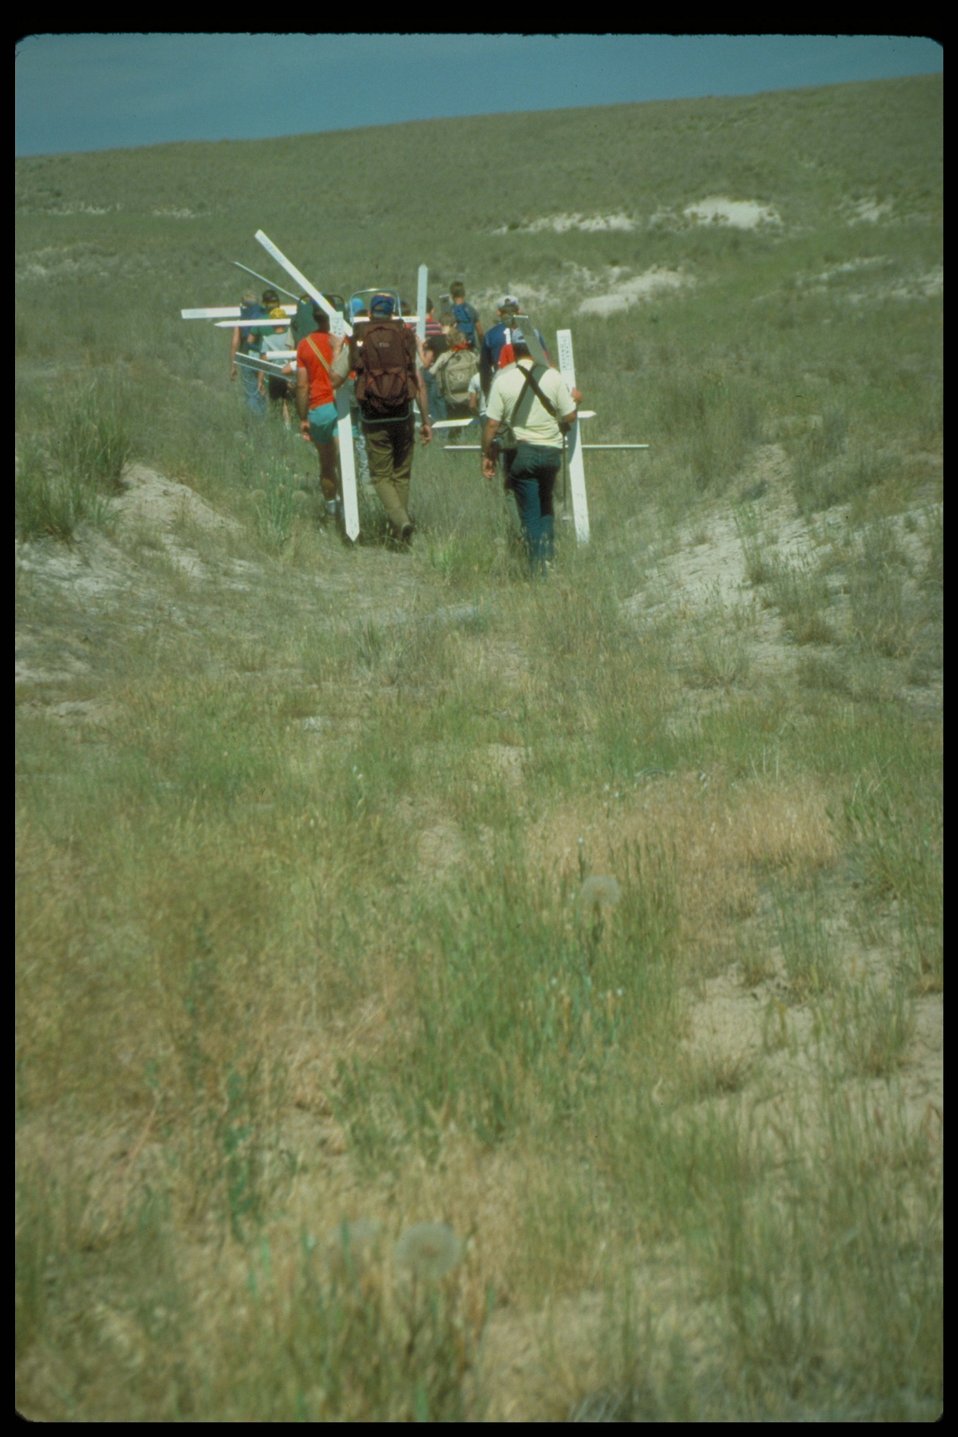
Boyscout Oregon Trail markings Oregon Trail Lower Snake River District